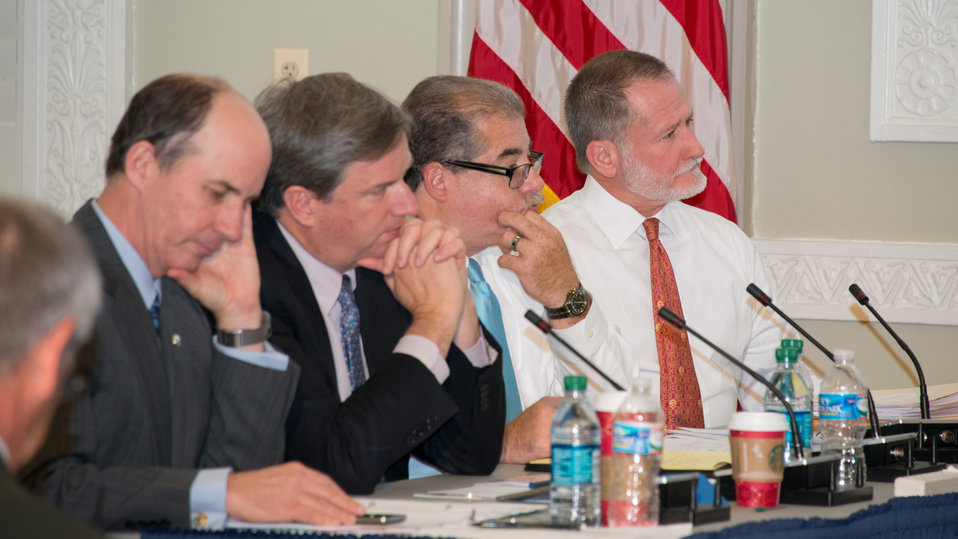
Public Meeting of Advisory Council on Wildlife Trafficking

Members of the Advisory Council on Wildlife Trafficking

From left to right: Carter S. Roberts, President and CEO, World Wildlife Fund; Cristián T. Samper,
President and CEO, Wildlife Conservation Society; Bryan Arroyo, Assistant Director for International Affairs, USFWS; David H. Barron, Chairman, Board of Governors, The ICCF Group